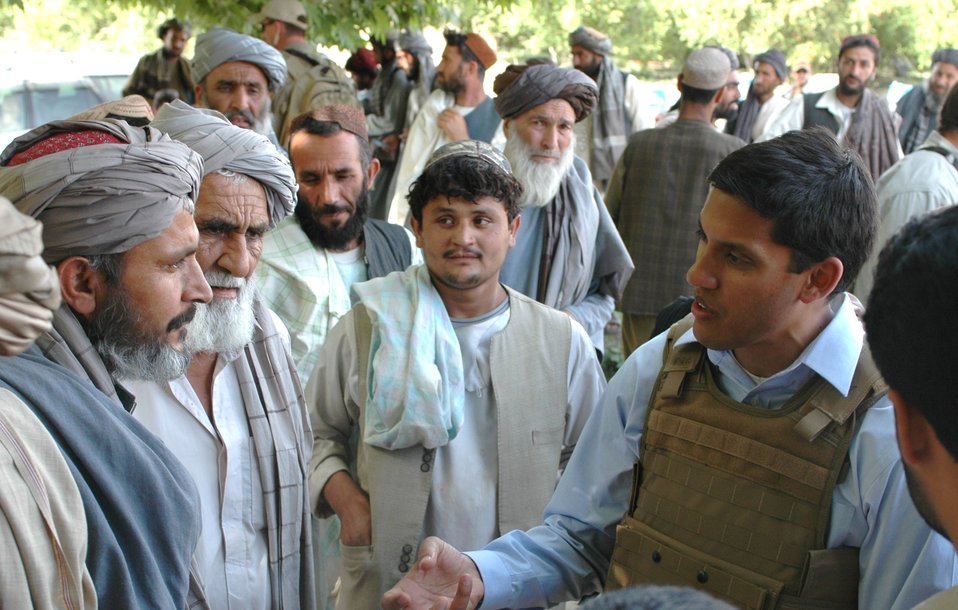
Dr Shah Visits Argandab April 10, 2010